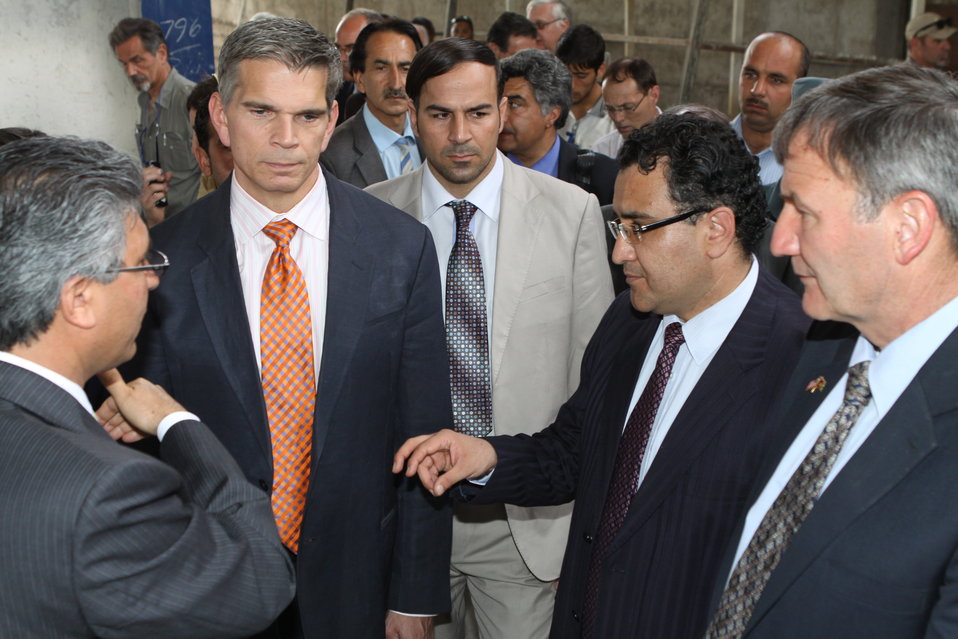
100525 Hirat Marble Conference 452